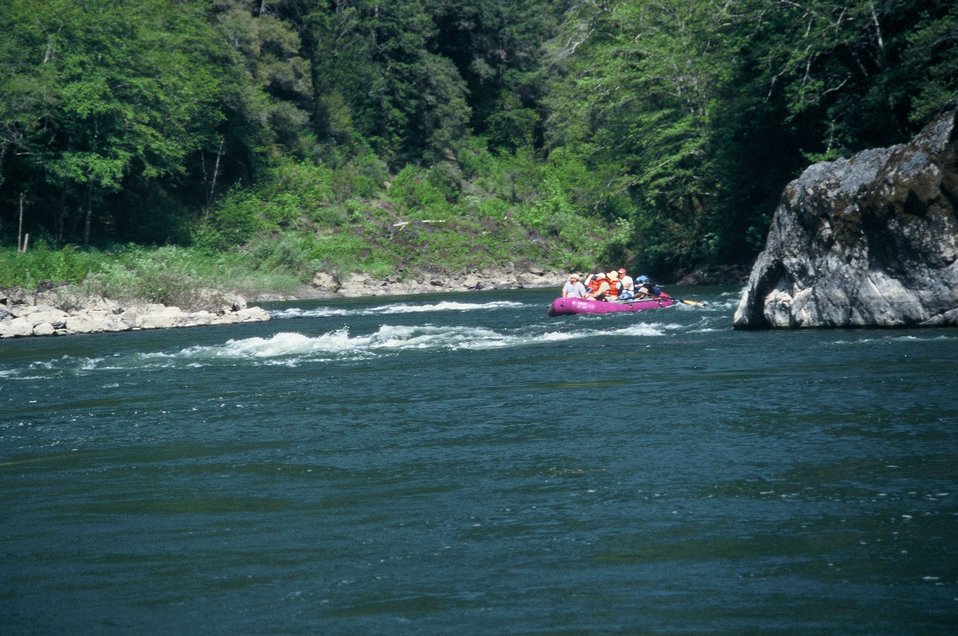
Wild section of the Rogue River from Grave Creek to Foster Bar May 19 to May 22.